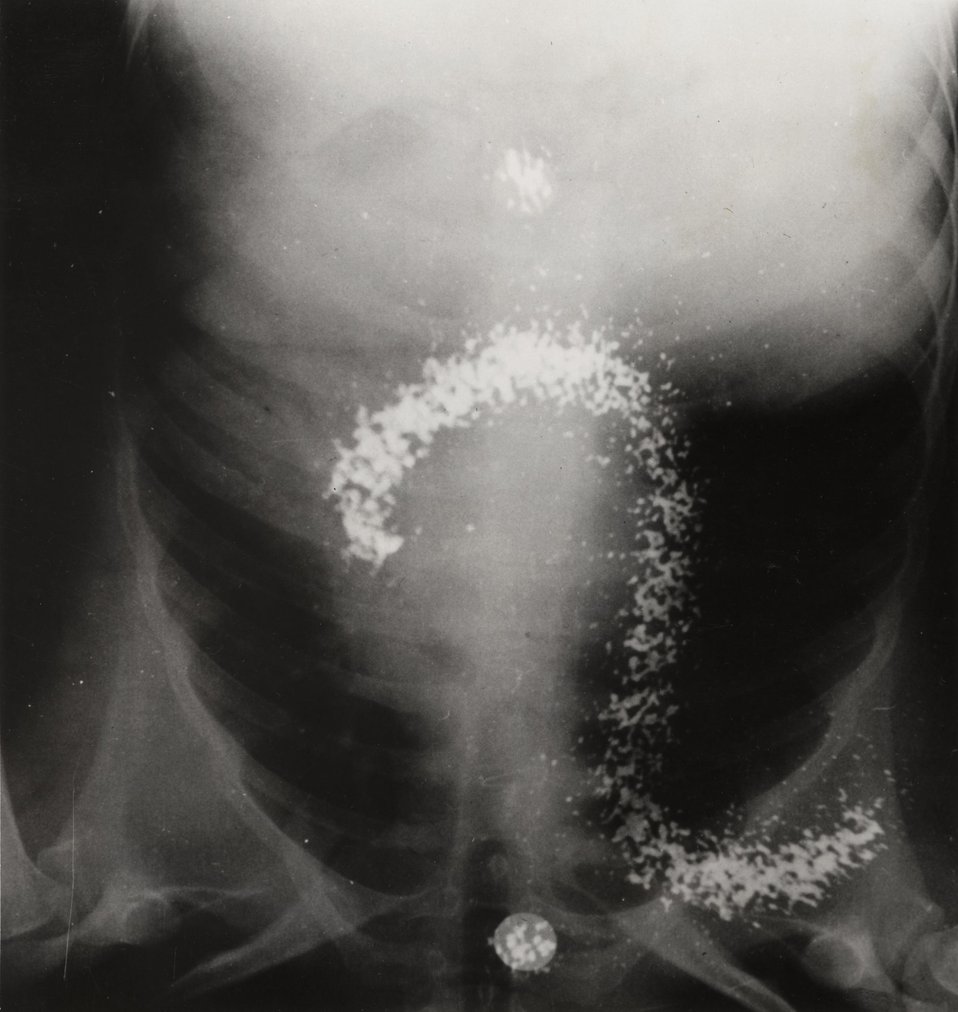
View of chest area during cardiac catherization. Taken with Scintillation camera developed at Donner Laboratory. Circa 1972.